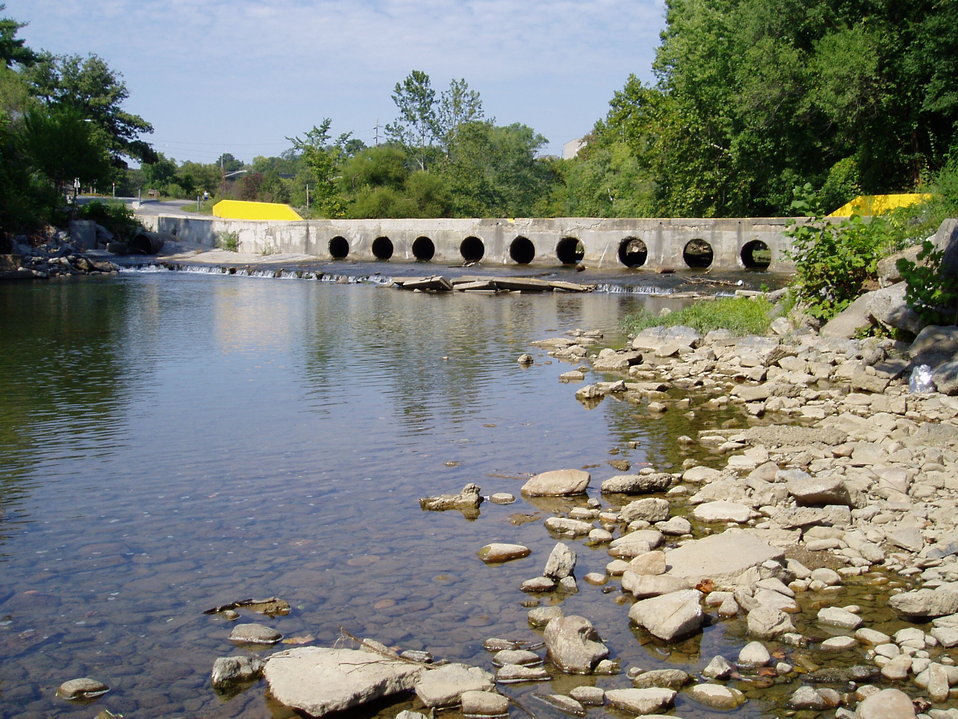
Old Bridge at Wiley Drive

The old bridge crossing at Wiley Drive before project construction. Culverts in the previous bridge were undersized and elevated above the bed of the river, effectively blocking upstream fish migration in low flow periods and exacerbating flood events.